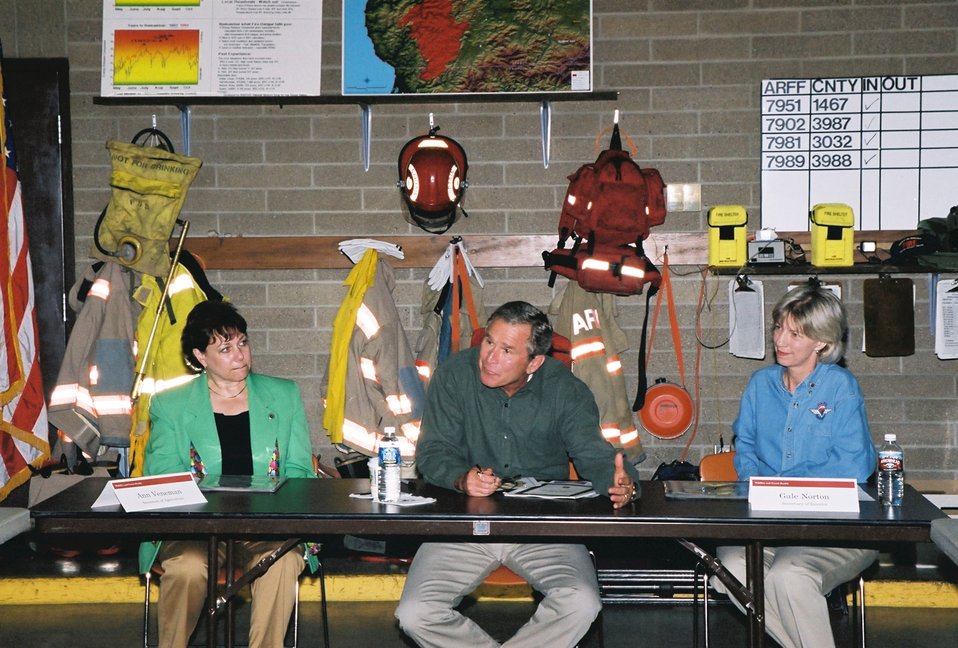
President Bush participates in Squires fire briefing with Ann Veneman, Agriculture Secretary and Gale Norton, Secretary of the Interior. August 22, 2002 Photo John Craig